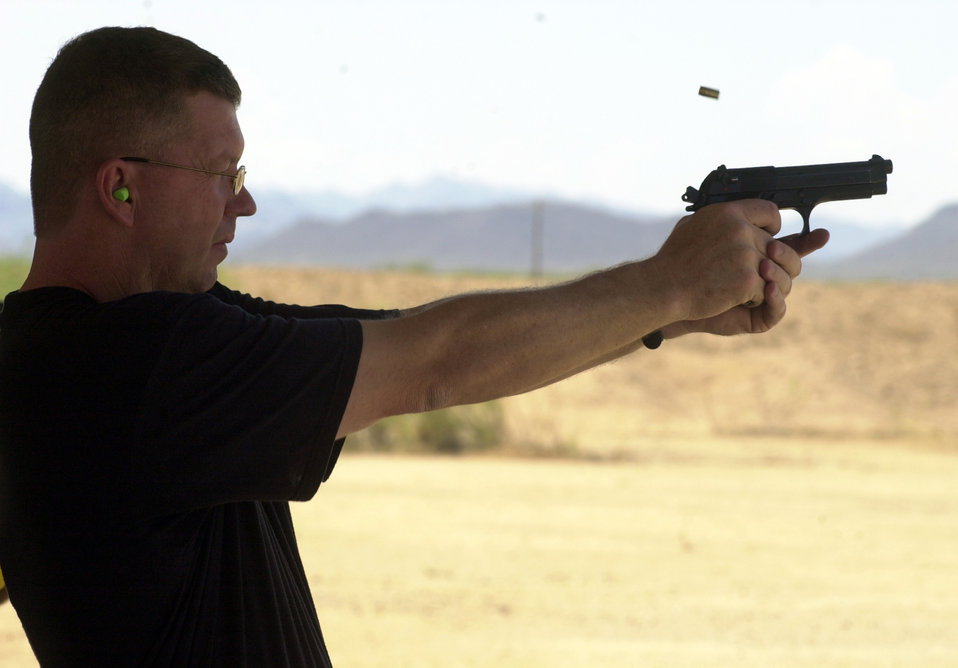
Ready, aim ....

PHOENIX, Ariz. -- Master Sgt. Anthony Lancaster fires an M-9 at the Ben Avery shooting facility here July 27. Sergeant Lancaster is a maintenance engineering superintendent with the 56th Civil Engineer Squadron at Luke Air Force Base, Ariz.